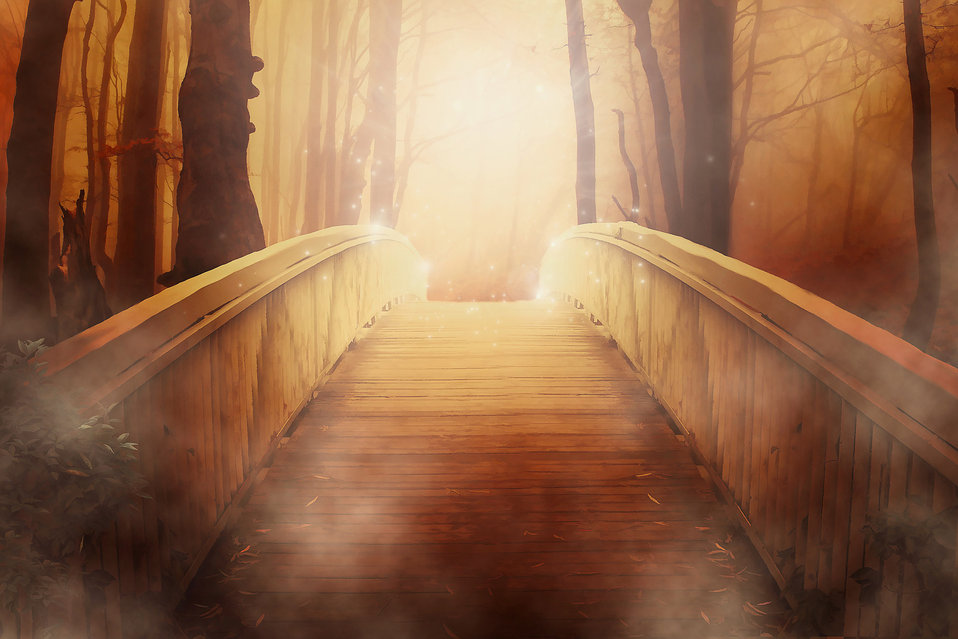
Wallpapers - bridge

Ready background with the old bridge on a forest.